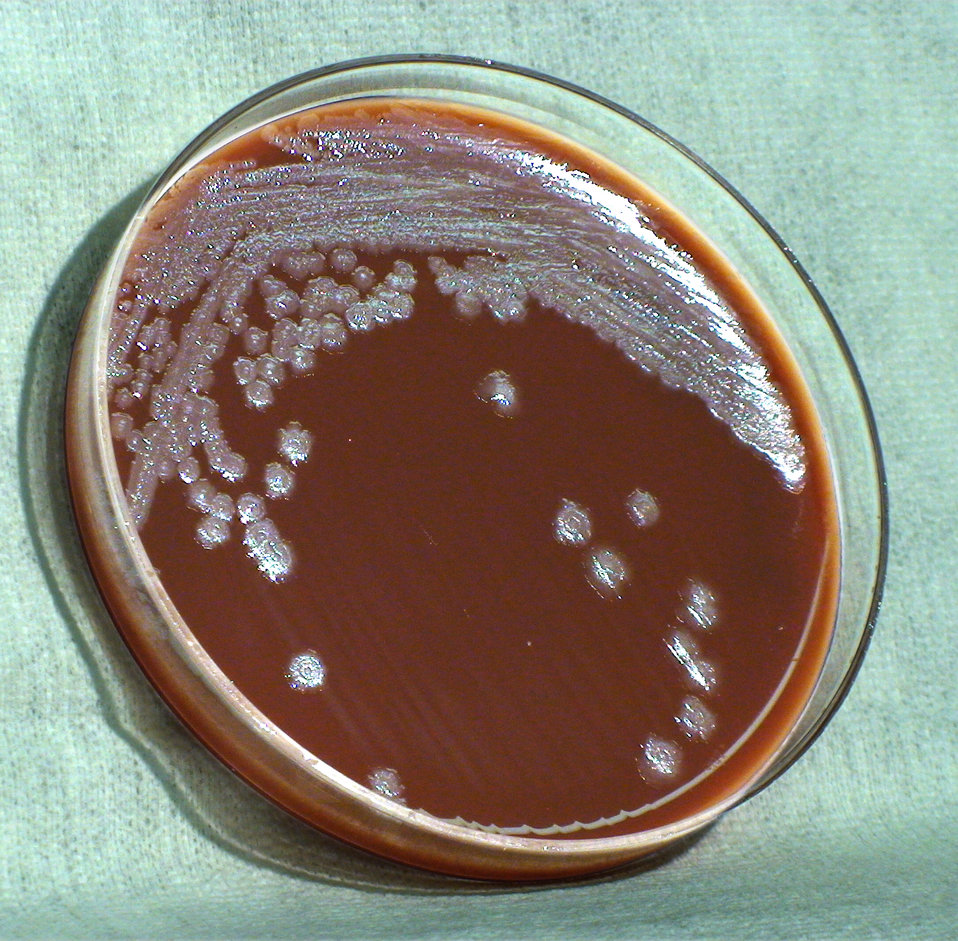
This photograph depicts the colonial morphology displayed by Gram-negative Burkholderia thailandensis bacteria, which was grown on a medium of chocolate agar, for a 48 hour time period, at a temperature of 42�C. Note the metallic sheen of these colonies. See both PHIL 12403 and 12404, for views of this bacterial specie, grown on the same medium, for the same amount of time, however, at a lesser temperature of 37�C.